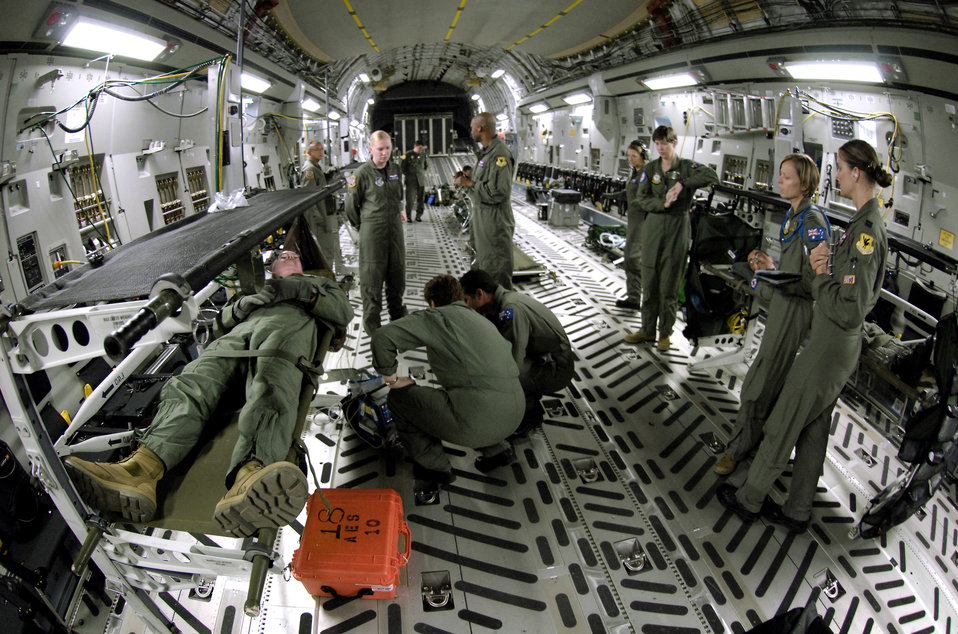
Australians train to save lives on C-17

Air Force instructors observe as Royal Australian Air Force medical personnel tend to a simulated patient onboard a C-17 Globemaster III Oct. 16 during aeromedical evacuation operations training at Hickam Air Force Base, Hawaii. Airmen from the 18th Aeromedical Squadron from Kadena Air Base, Japan, are at Hickam to train RAAF medical personnel who will be using specialized equipment and the C-17 for aeromedical evacuation.